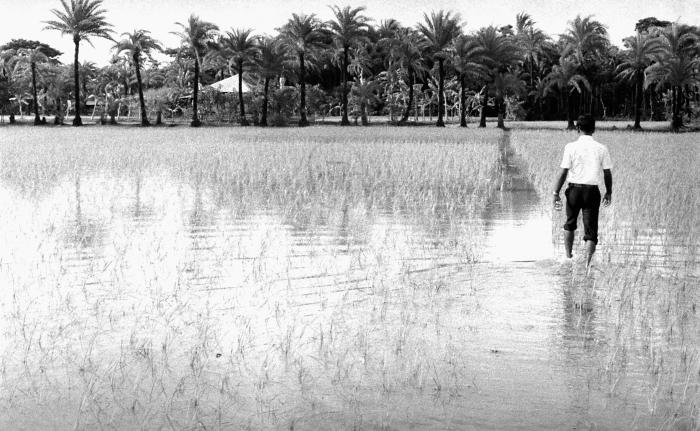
This photograph pictured a man walking through a rice field, as he carried a cache of smallpox immunization bifurcated needles and vaccine, which he was to administer to residents of a nearby village. This image was part of a series provided by Dr. Stan Foster, and captured by Pierre Claquin, M.D., B.A.C., who at the time was a member of the World Health Organization's Smallpox Eradication Program. It was part of a series photographed by former E.I.S. officer, Stanley O. Foster M.D., M.P.H., and was one of a series entitled 'The Story of One Smallpox Jeep', which depicted the travails faced by the jeep, and its occupants of public health practitioners, as they road through the Bangladesh countryside in an attempt to eradicate smallpox from the country.